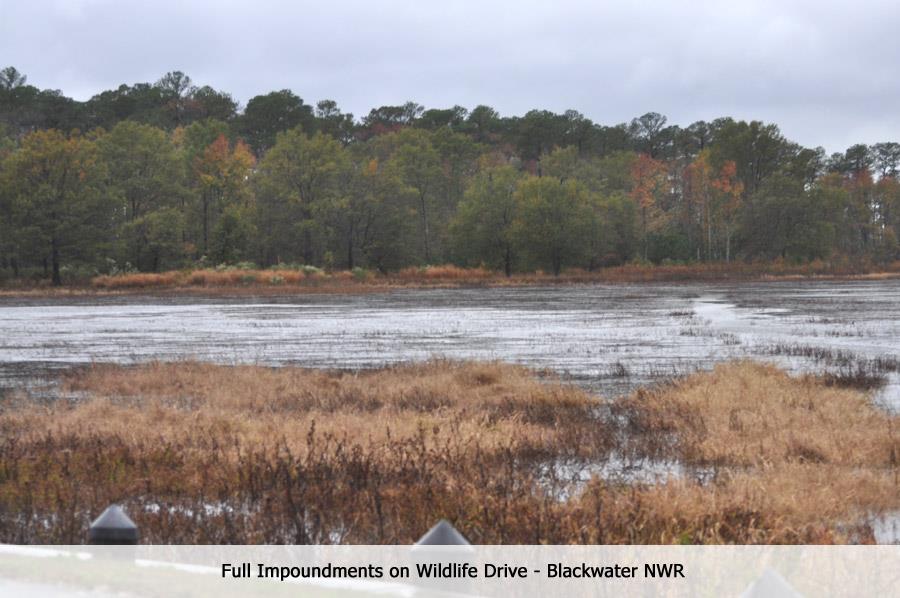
Full impoundments at Blackwater National Wildlife Refuge - Oct. 30 (MD)

On Wildlife Drive at Blackwater National Wildlife Refuge - Tuesday 10/30